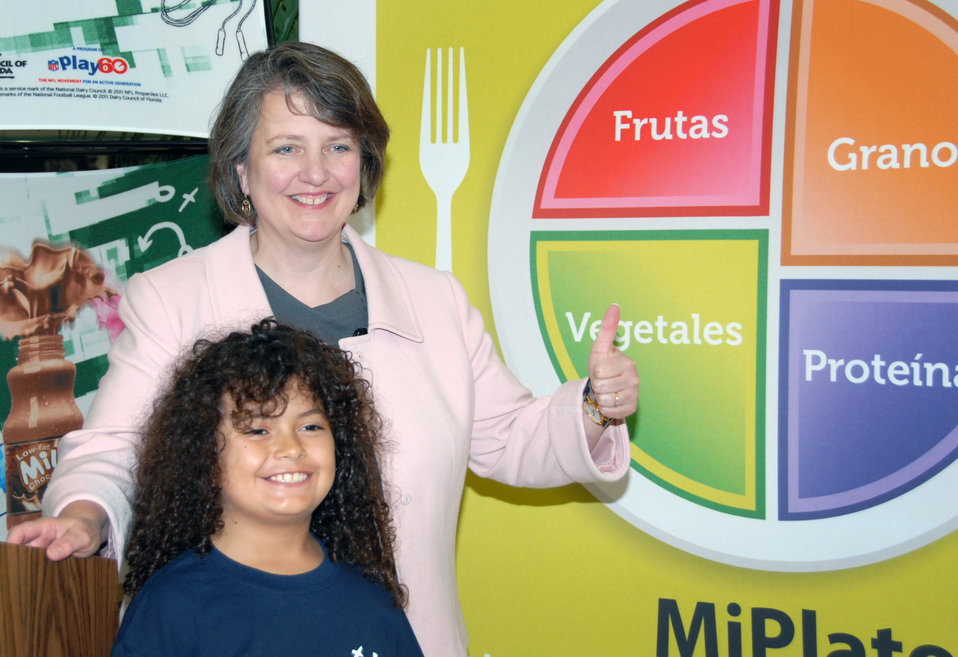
Agriculture Deputy Secretary Kathleen (left) along with Bobby Sena gives thumbs up to celebrate the first anniversary of the Myplate food icon and to highlight MiPlato at the Caribbean Supercenter, in Orlando, FL., on Friday, June 15, 2012. Secretary Merrigan visited Orlando's Caribbean Supercenter, a family-owned business committed to community involvement, to announce a MyPlate Community Partnership with the store.